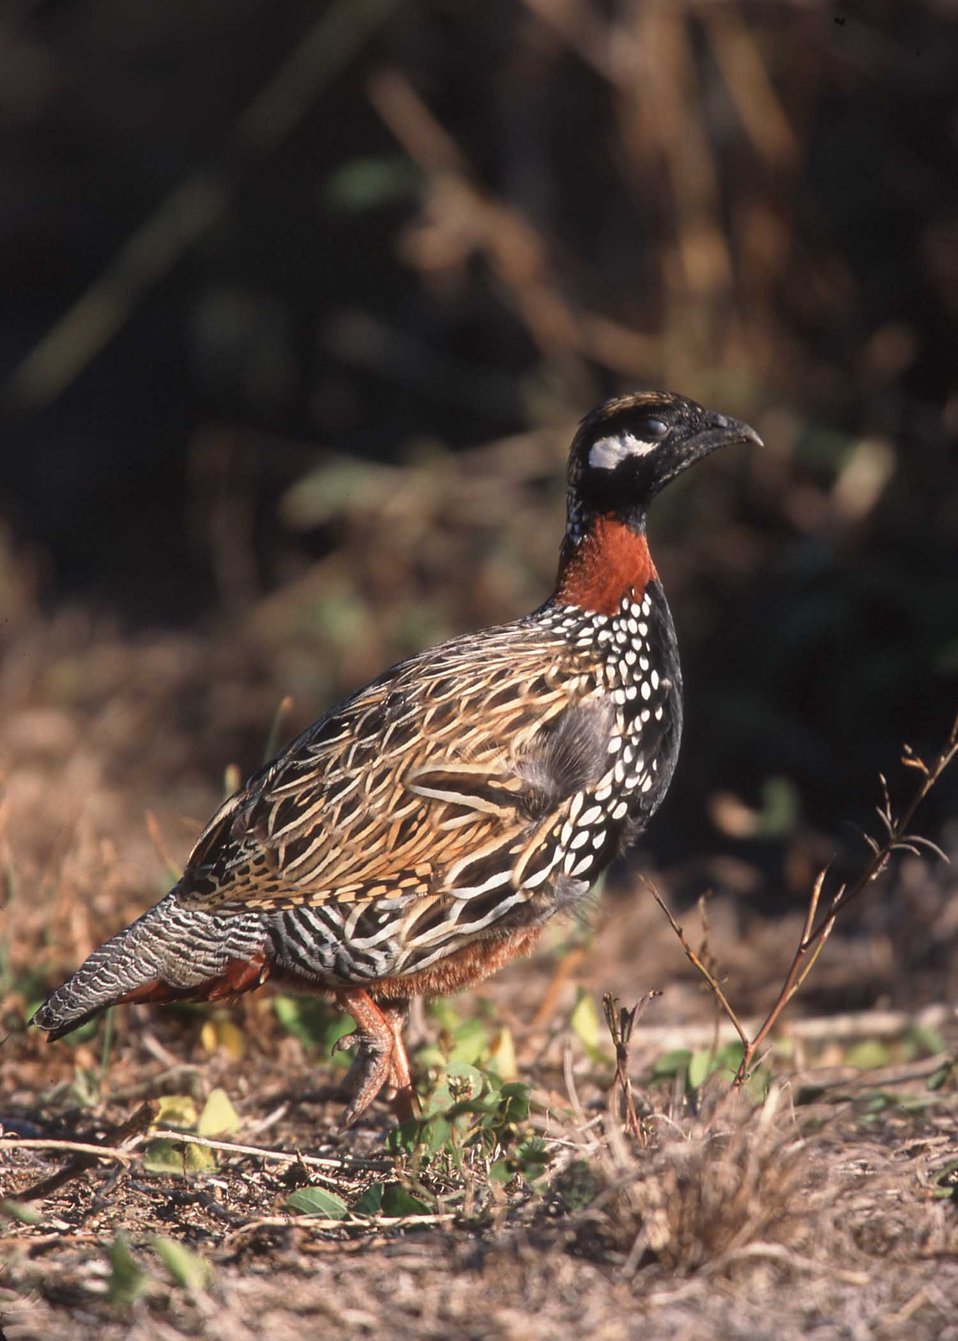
Black Francolin in Hawaii.